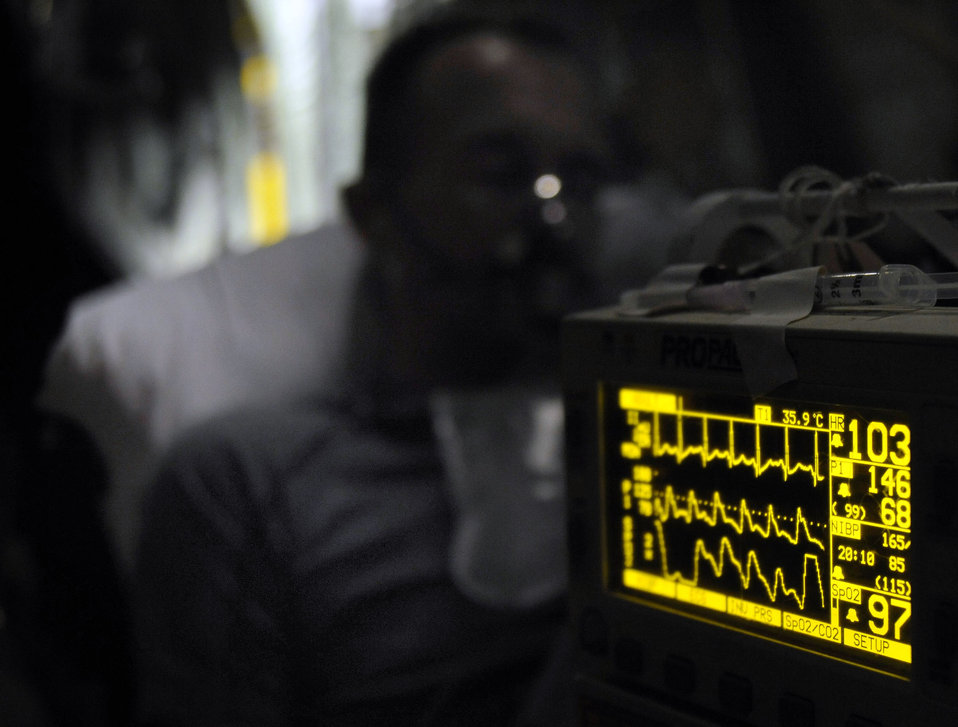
Kandahar Airmen fly missions of mercy

A patient recieves care from Airmen during a sortie Oct. 6, 2009. During the mission patients from the U.S., coalition countries and local Afghans were transported to recieve appropriate care. These Airmen are assigned to the 451st Aeromedical Squadron at Kandahar Airfield, Afghanistan.